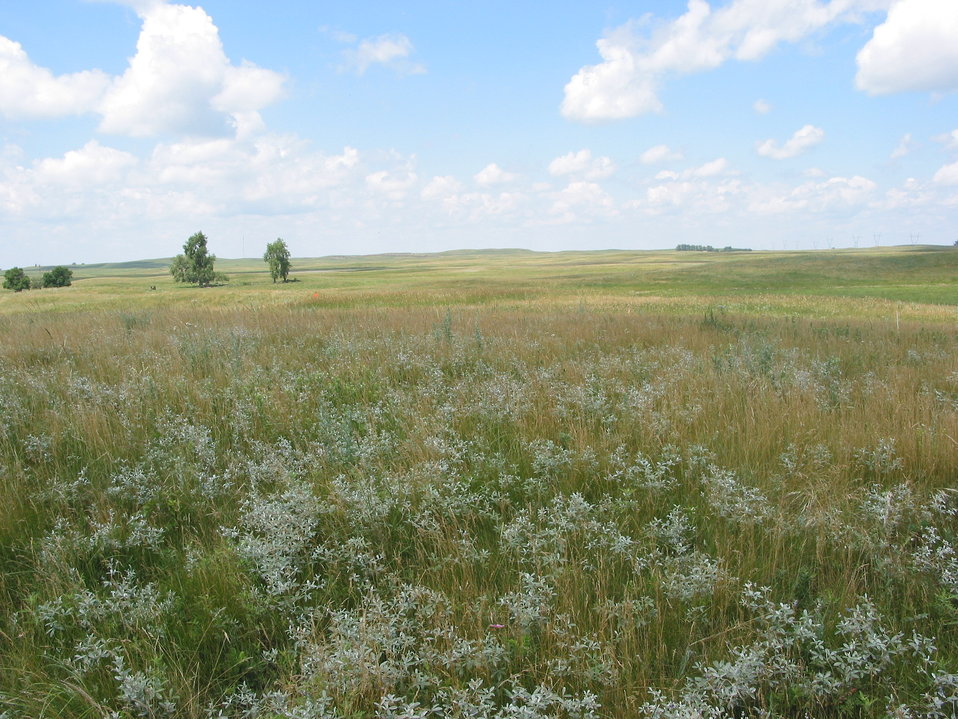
Prairie

This prairie photo shows the palette of colors that can be found in the native plants of the mixed-grass prairie.